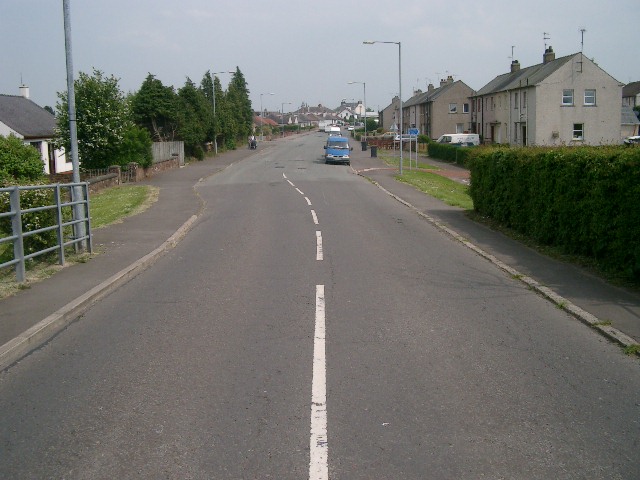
Terregles Road